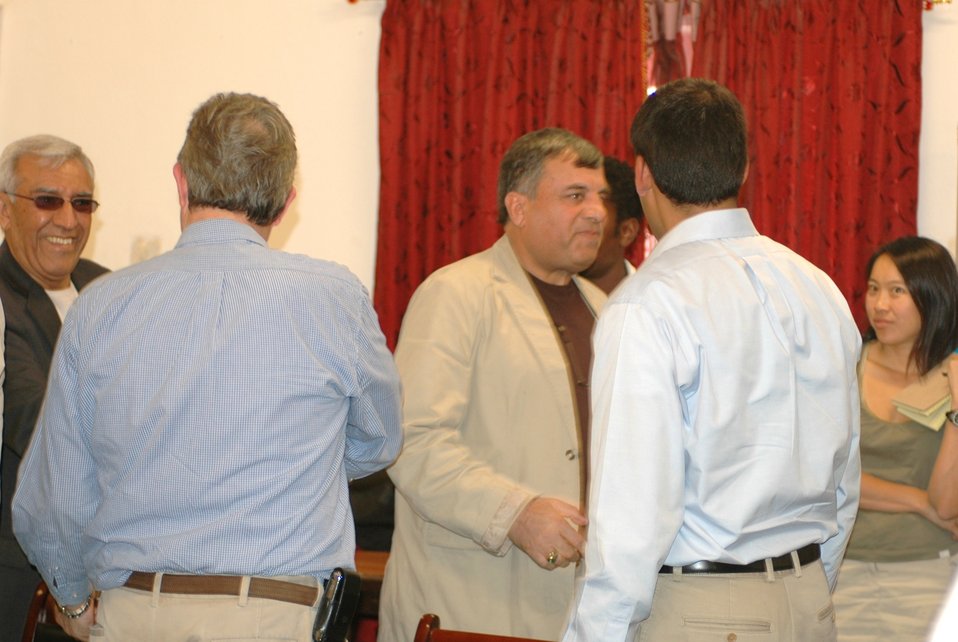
Dr Shah Visits Kandahar April 9, 2010